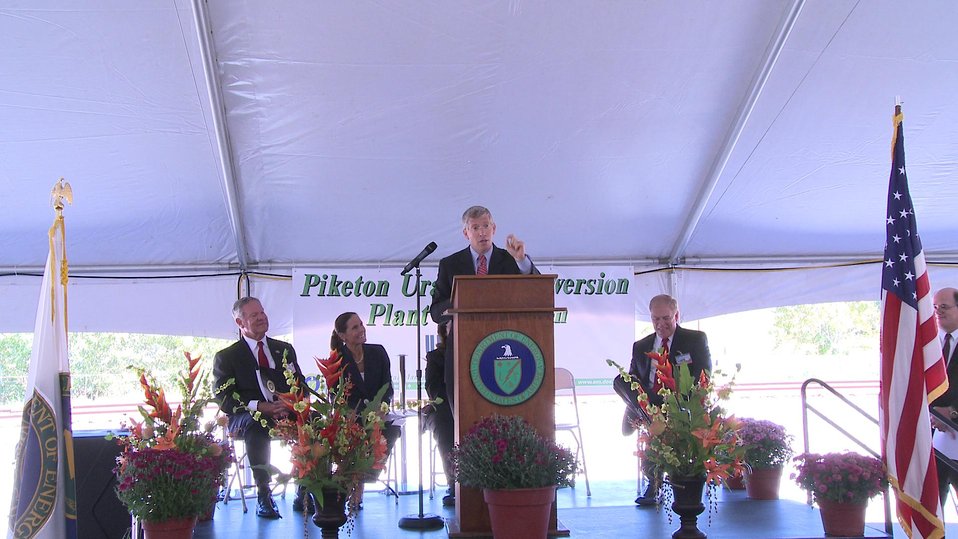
Deputy Secretary Poneman speaks September 9 at a ceremony commemorating the start-up of the hot functional testing operations at the Depleted Uranium Hexafluoride Conversion Plant in Piketon, Ohio. Seated to the left are Congressman Charlie Wilson (Ohio’s Sixth District) and Congresswoman Jean Schmidt (Ohio’s Second District) and to the right is Ohio Governor Ted Strickland, who also spoke during the ceremony.